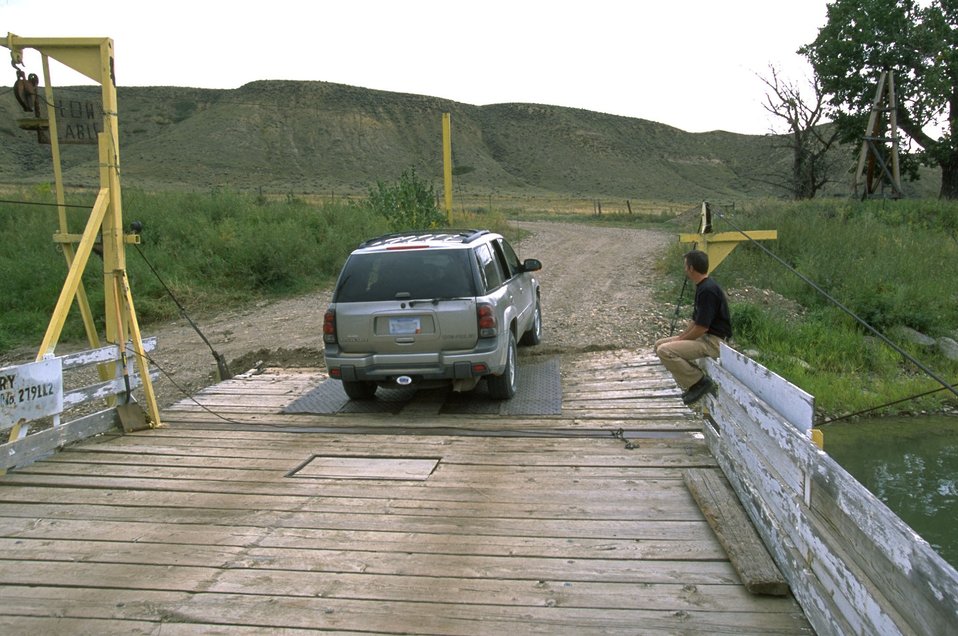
Stafford Ferry across the Upper Missouri River